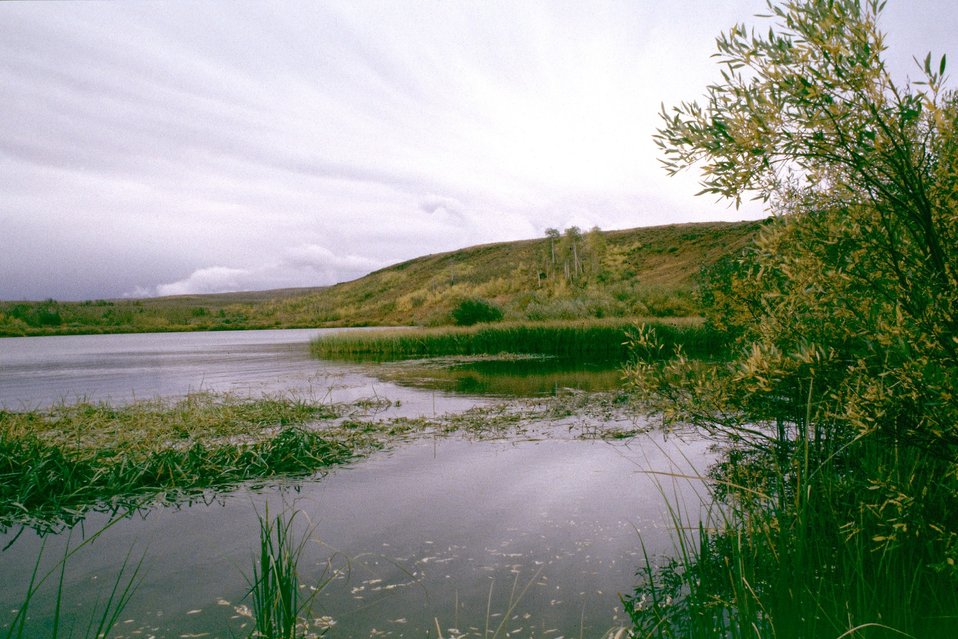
Fish Lake, Steen's Mountain.